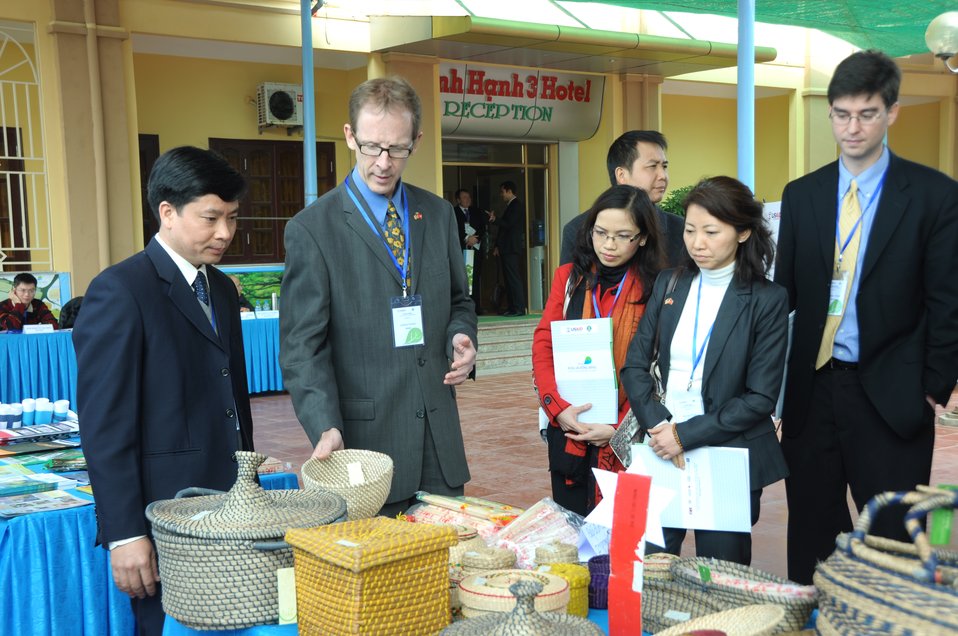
USAID launches the Vietnam Forests and Deltas project in Nam Dinh province.